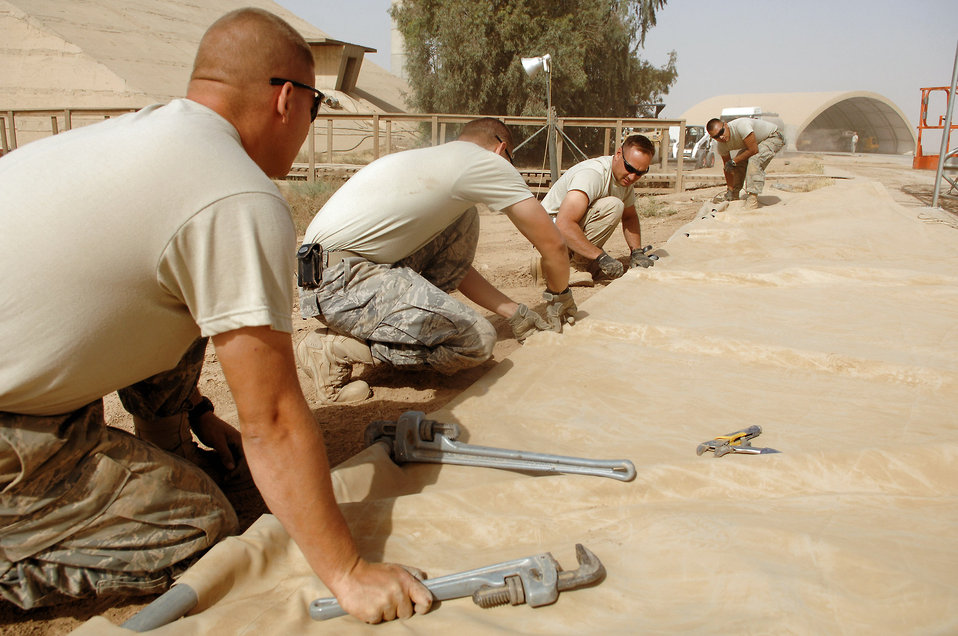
Turn the screws here

Airmen from the 332nd Expeditionary Civil Engineer Squadron piece together a big top shelter May 7 to house aircraft at Balad Air Base, Iraq. The shelter will keep Air Force assets protected from the elements.